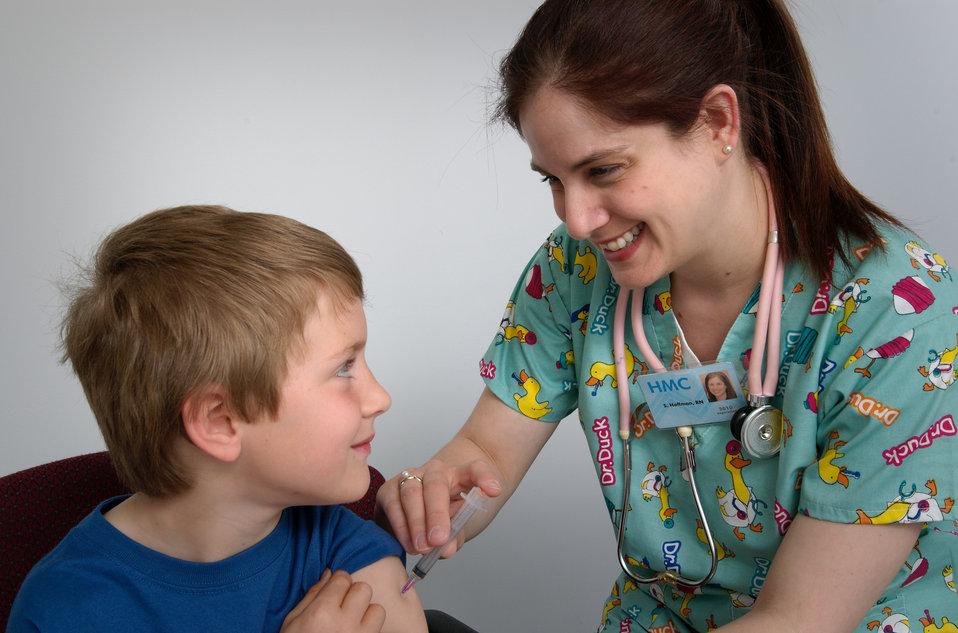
This 2006 photograph showed a nurse in the process of administering an intramuscular vaccination in the left shoulder muscle of this young, pre-teen boy.